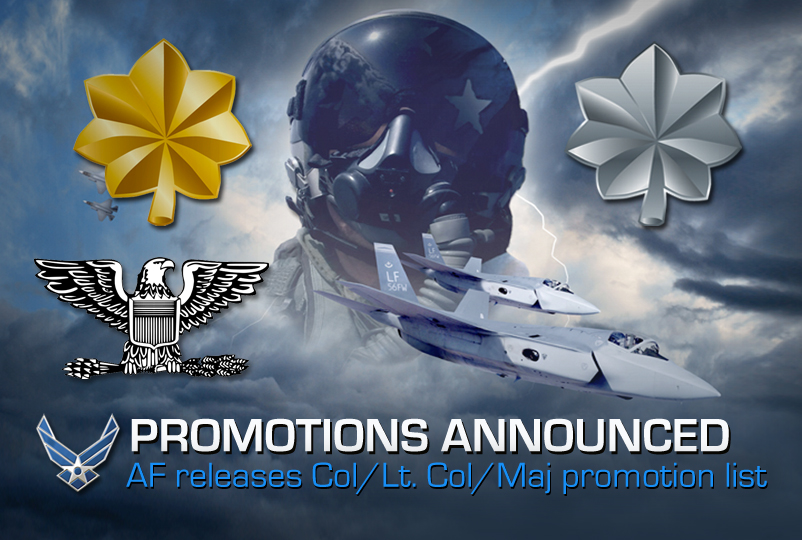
Air Force releases promotion list